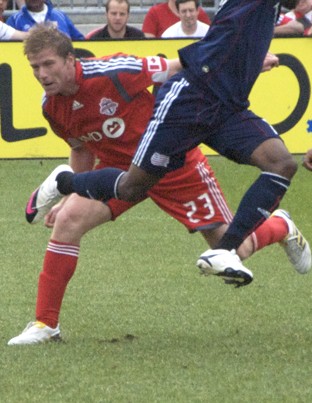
no original description